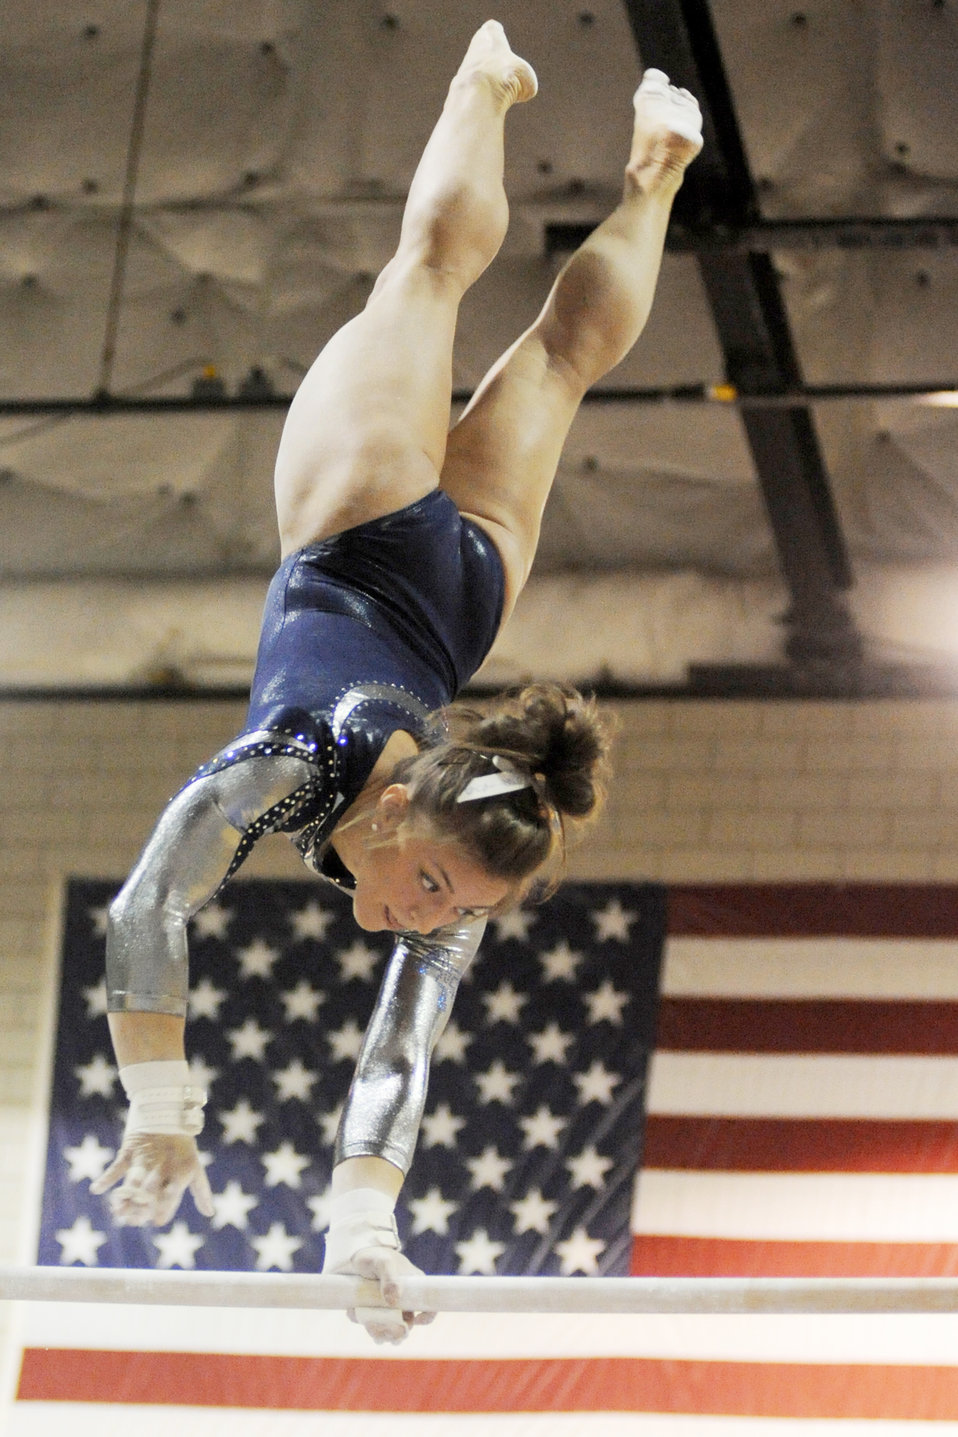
Women gymnasts compete in tri-meet

Falcon junior Holland Davis turns on the uneven bars while performing during the home tri-meet against Southeast Missouri State and Seattle-Pacific in the U.S. Air Force Academy's Cadet Gym Feb. 20, 2010. Air Force placed second in the team competition.